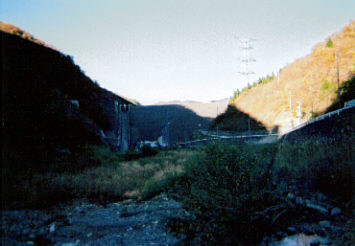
Dam